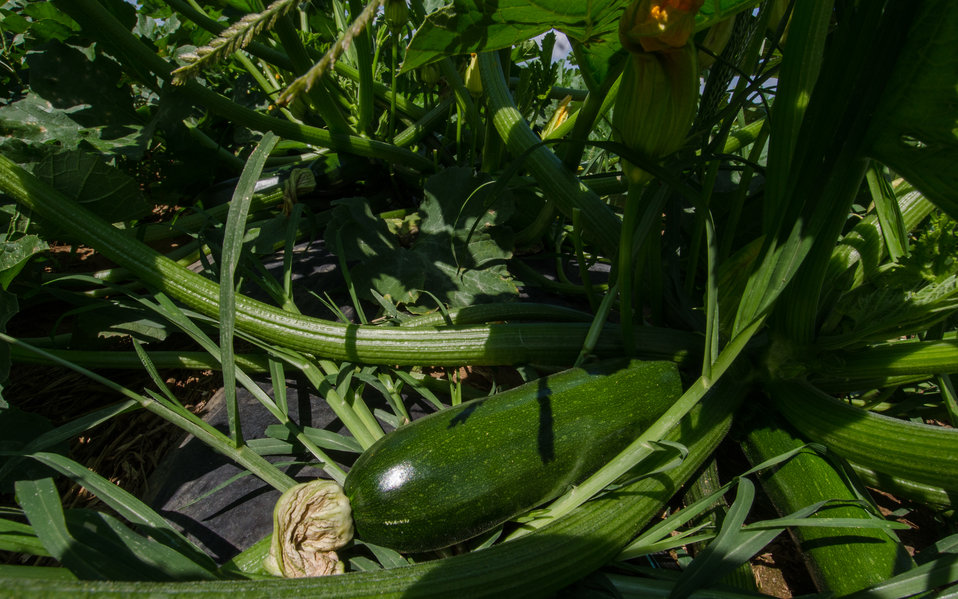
Kirby Farms third-generation family farm in Mechanicsville, VA, uses micro irrigation (drip watering) and plastic mulch (row covering) to efficiently grow green zucchini squash, on Friday, Sept 20, 2013. Water is pumped through a filtration/regulator system to flexible distribution pipes and hard connectors. Emitter hoses can be driven in where needed. Pressurized hoses emit water at a very slow rate near the base of the plants. Computers or timers provide additional controls. A micro irrigation system, also known as drip or trickle irrigation, is used to water directly to the plant root zone utilizing surface or subsurface applicators. For more information please see www.nrcs.usda.gov/Internet/FSE DOCUMENTS/nrcs141p2 024038...
Plastic sheeting is a form of mulch. It conserves soil moisture and reduces energy
use associated with irrigation, moderates soil temperature, provide erosion control, suppresses weed growth, facilitates the establishment of vegetative cover, improves soil quality, and reduces airborne particulates.